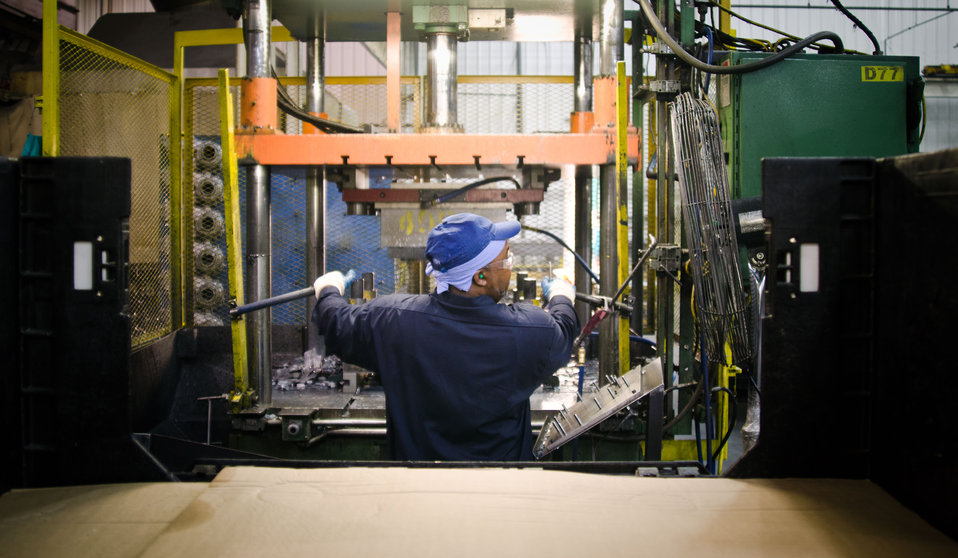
Trim Operator Roger Brown at Port City Group’s Port City Castings Corporation manufactures high-pressure aluminum die-castings, mostly for the automotive industry, in Muskegon, MI, facility on Wednesday July 20, 2011. Port City Group boosted its employment by 12 percent over last year thanks to two Rural Business Guaranteed Loans totaling $9.6 million. In its 80,000 sq. ft. facility, machines that range from 800 – 1,600 tons, and cast A380 aluminum alloy products from melted ingots of aluminum, into automotive components of U.S.A. made vehicles. The process features a variety of robotic presses; computer controlled machining; quality control facility; and complete measurement and testing laboratory. In 2009 banks were backing out of loans for PCG equipment purchase agreements. The U.S. Department of Agriculture (USDA) loan guarantee helped make the loan possible with its guarantee. PCG obtained the needed robotic and other equipment. This resulted in a stable workforce that has since grown. When asked about their USDA experience, Port City Group Sales Manager Laura LaGuire said, “It was great! They were very helpful. Everything that came up was handled smoothly, the money came in place when it was needed, and it was a very smooth transition.”